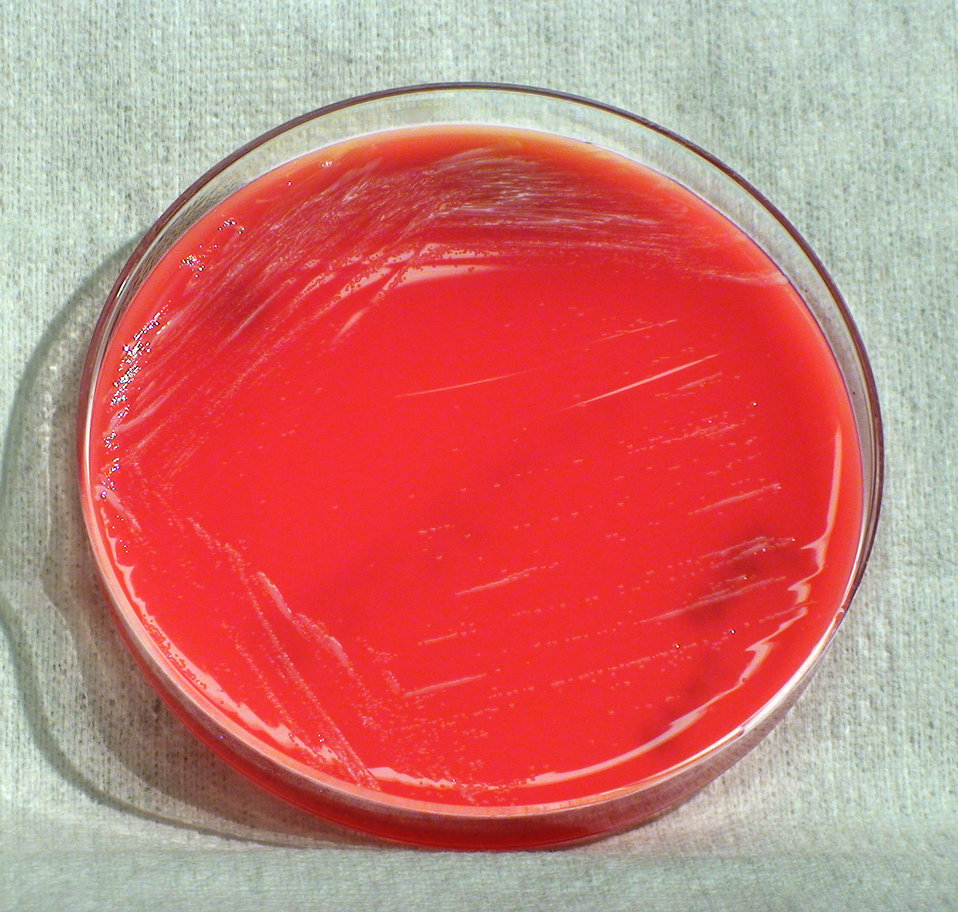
This photograph depicts the colonial morphology displayed by Gram-negative Brucella melitensis bacteria, which was grown on a medium of sheep's blood agar (SBA), for a 72 hour time period, at a temperature of 37�C. See also, PHIL 12398 for a view of this bacterial specie, colonized on modified Thayer-Martin agar, for the same amount of time and temperature; PHIL 12400, for B. melitensis bacteria grown also, on SBA at the same temperature, but for a lesser time period (48hr); PHIL 12452, for B. melitensis bacteria grown on SBA at the same temperature, but for one-third the time period (24hr). Brucella spp. bacteria are responsible for causing the disease known as brucellosis.